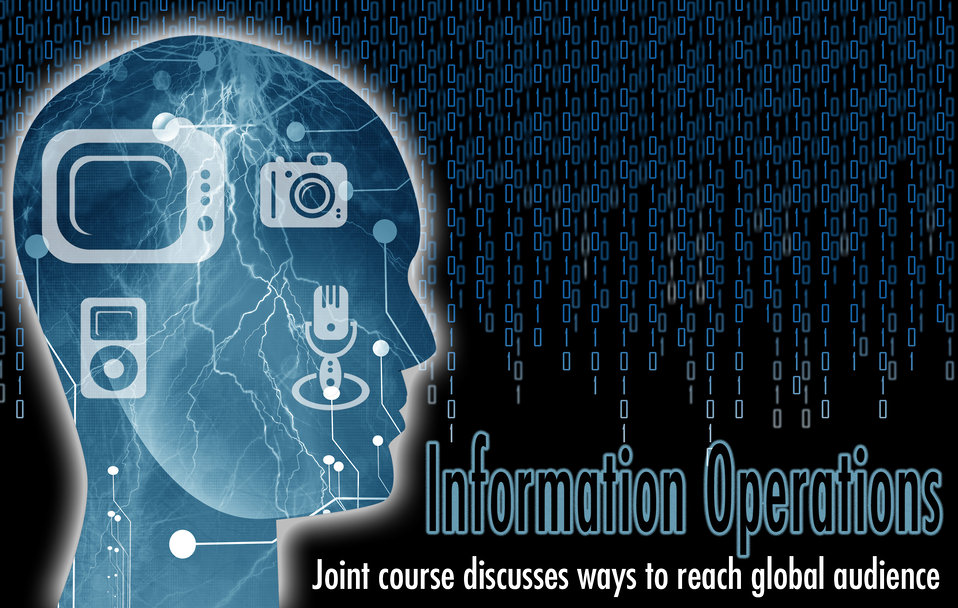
Information operations course expands technology knowledge

A new information operations course held Nov. 6 to 9 at Maxwell Air Force Base, Ala., is helping to expand technology knowledge.